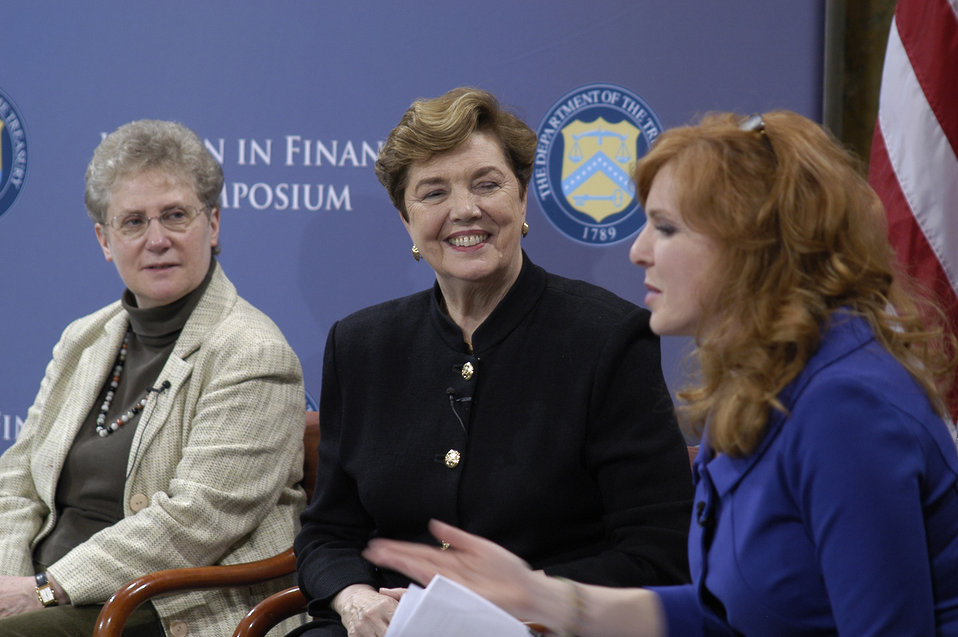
Women in Finance Symposium, 03/29/2010

Moderator Liz Claman of FOX Business Network talks to Abby Joseph Cohen of Goldman Sachs and Molly Broad from the American Council on Education at the Women in Finance Symposium at Treasury on March 29, 2010.